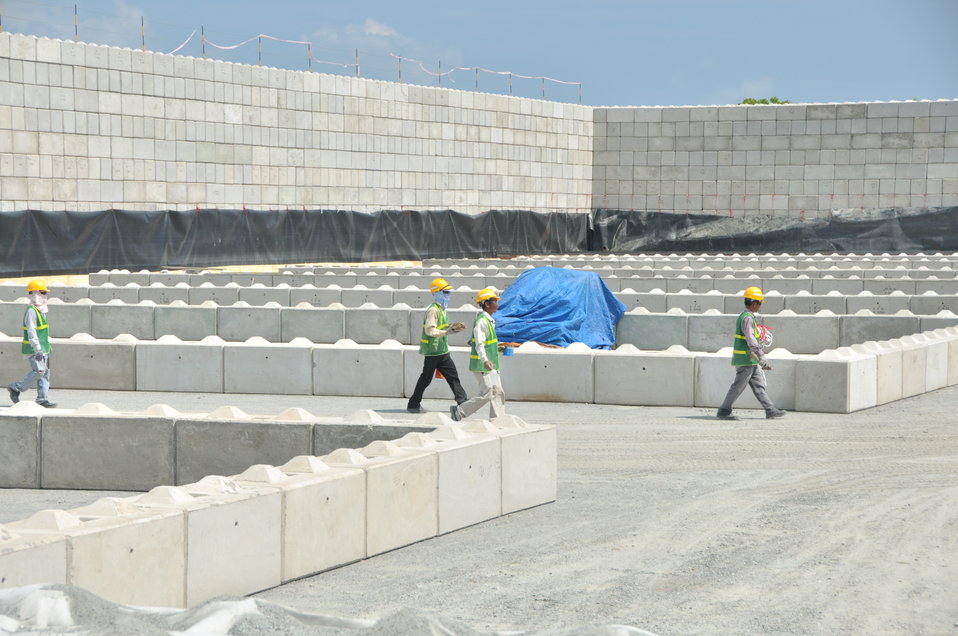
Media Tour of Environmental Remediation of Dioxin Contamination at Danang Airport

Danang, Vietnam
April 24, 2013